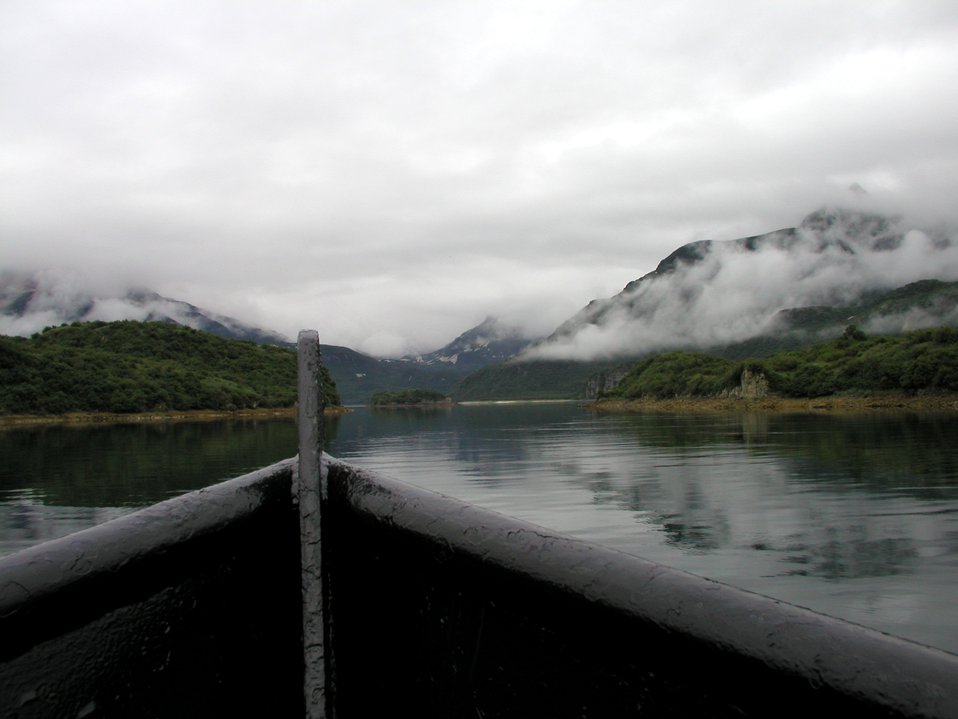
Magnificent scenery of Geographic Harbor seen as research vessel enters bay.